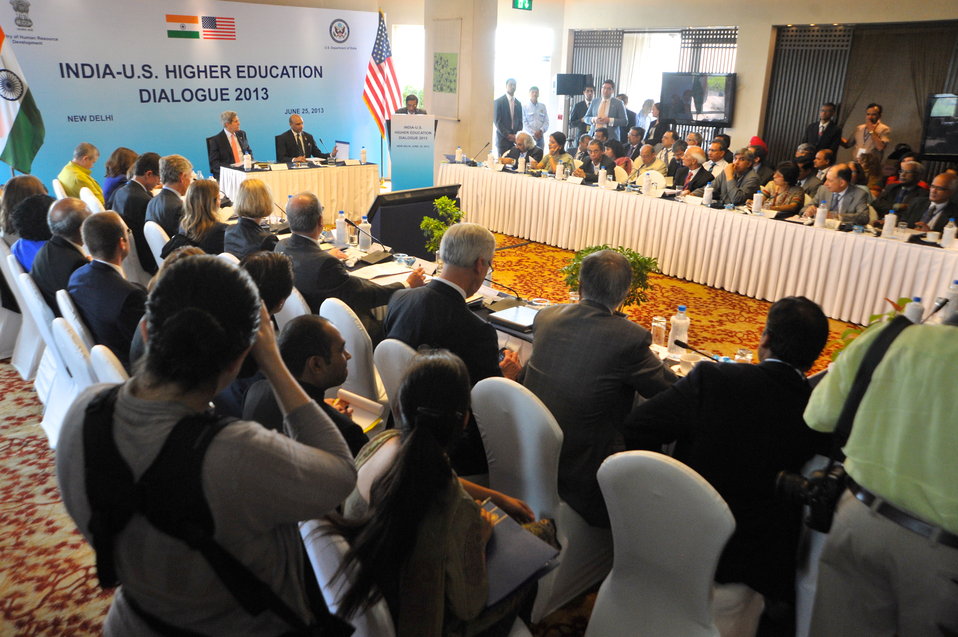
Secretary Kerry Attends a Higher Education Forum

U.S. Secretary of State John Kerry opens a Higher Education Dialogue in New Delhi, India, on June 25, 2013.